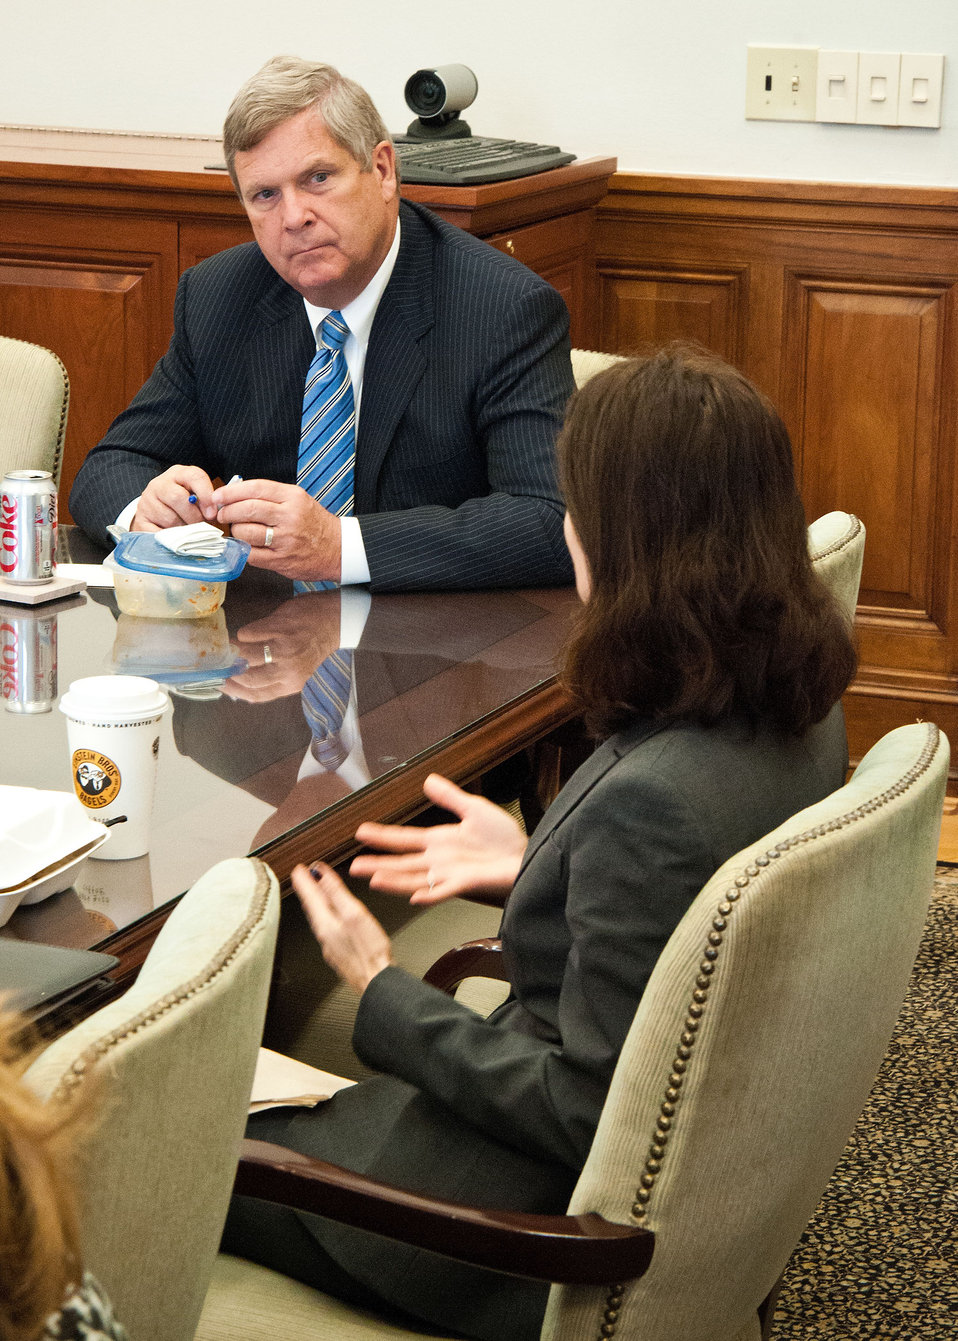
Agriculture Secretary Tom Vilsack listens to U.S. Department of Agriculture (USDA) Rural Development (RD) Rural Utilities Service (RUS) Deputy Administrator Jessica Zufolo during a Brown Bag Lunch session with Secretary Vilsack in Washington, D.C. on Wednesday, Sept. 26, 2012. Secretary Vilsack holds the occasional Brown Bag Lunches to gain information and knowledge to assist in the administration of the affairs and programs of the Department, and to thank the employees for their diligent work to the Department and as public servants, as well as gaining knowledge of the professions of the employees. Secretary Vilsack was sincerely interested in learning to know the employees working for the Department.